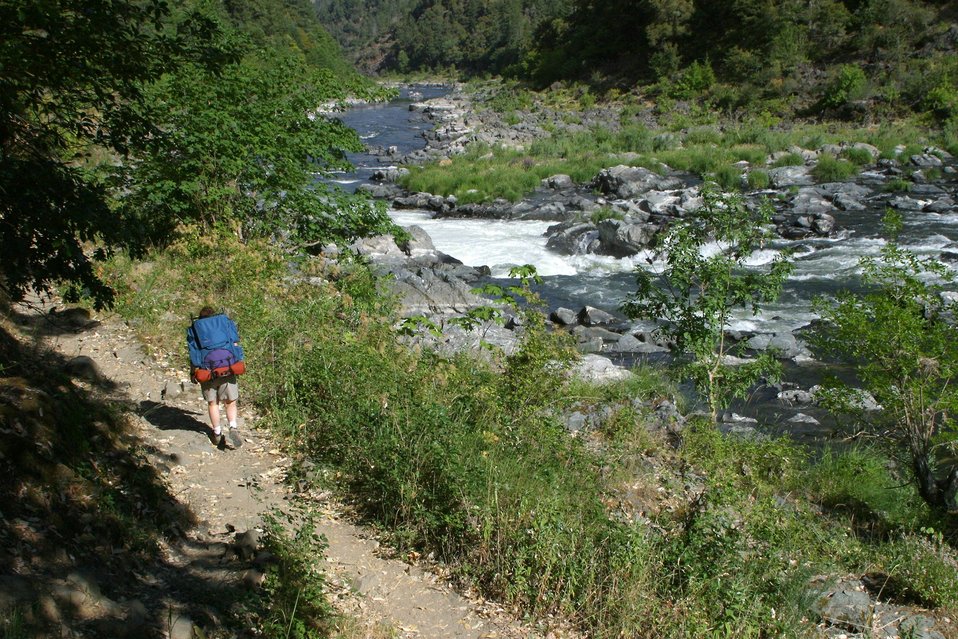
Hiking Rainie Falls Trail between Grave Creek and Rainie Falls.